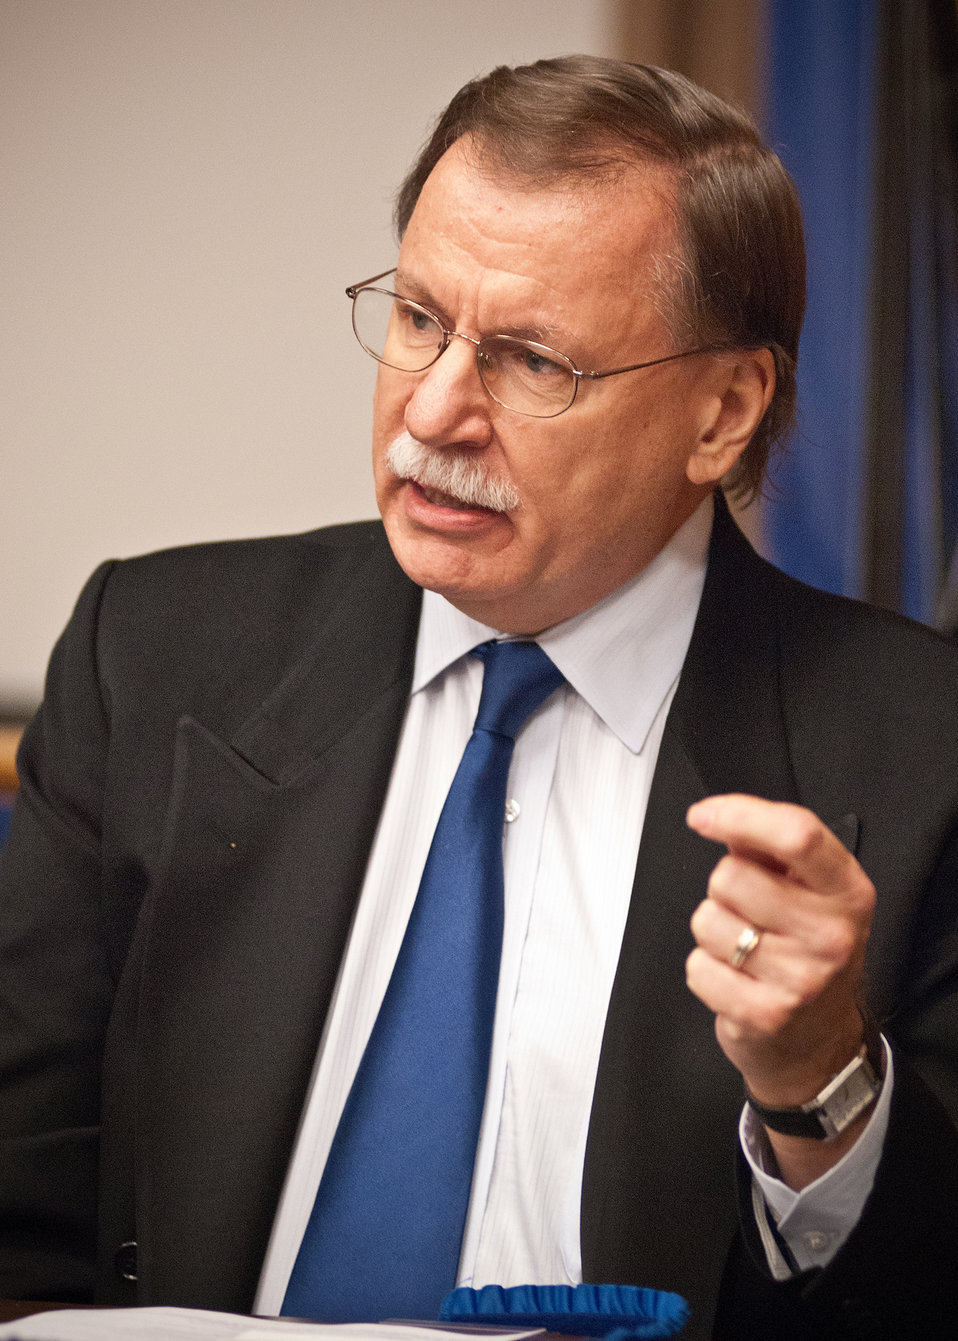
William Bethel, National Institute of Food and Agriculture a member of the USDA Panel of Success: Hiring and Employing Individuals with Disabilities offers his experience and advice to U.S. Department of Agriculture employees during National Disability Employment Awareness Month event in Washington, DC, on Wednesday, October 5, 2011. Agriculture Secretary Tom Vilsack is dedicated to establishing the USDA as the lead Federal agency in employing individuals with disabilities. The theme for the event is “Profit by Investing in Workers with Disabilities.” USDA is committed to ensuring that all our programs are accessible and inclusive of individuals with disabilities.